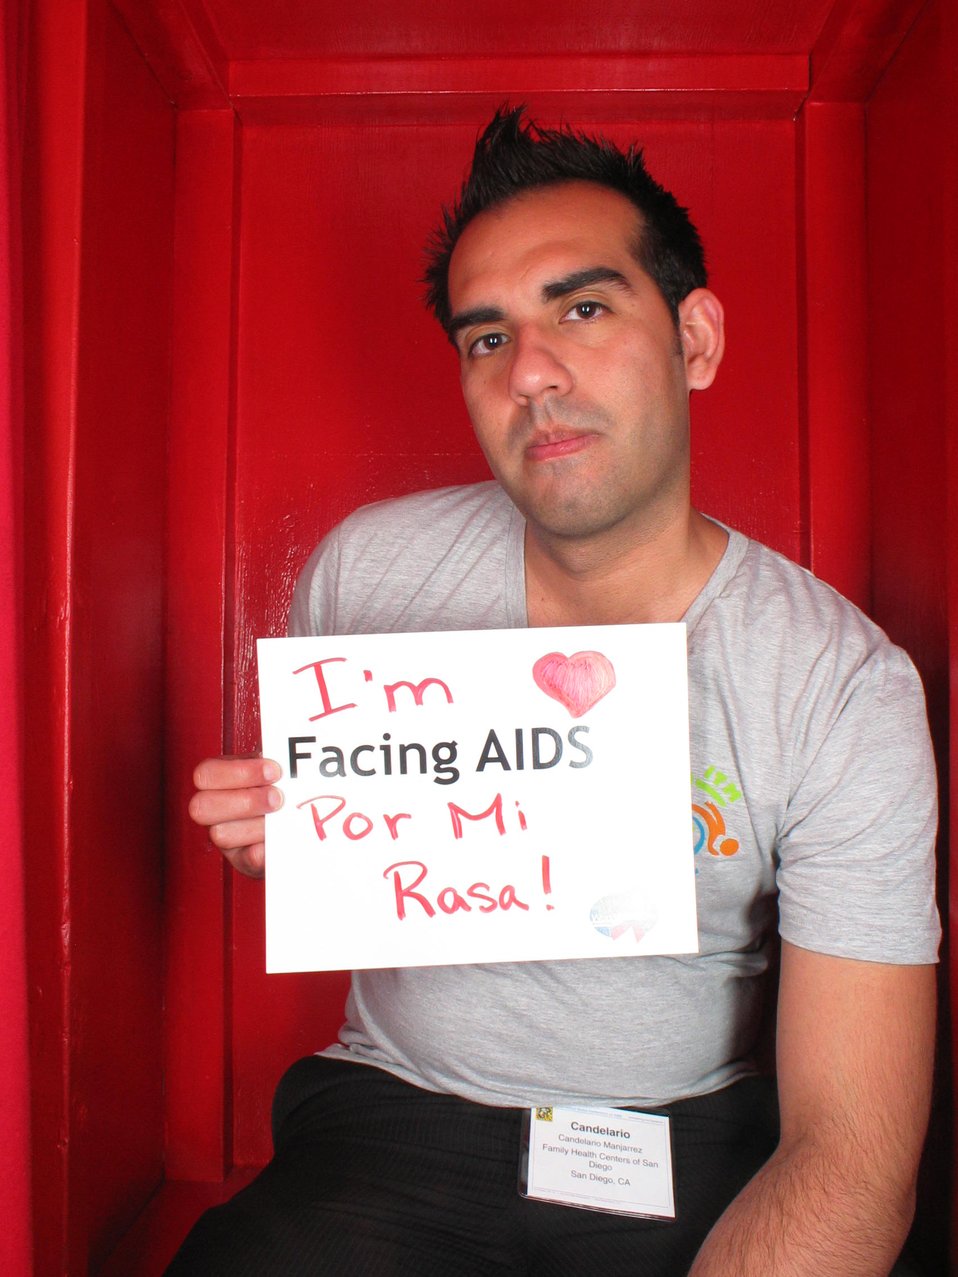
I'm Facing AIDS por mi Rasa!